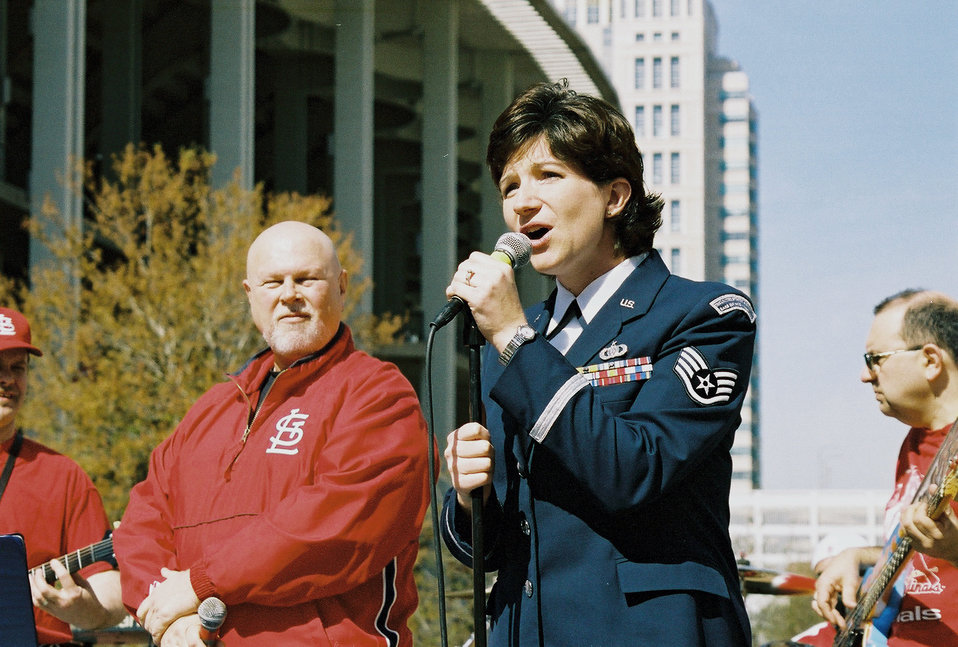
Opening season

ST. LOUIS -- Staff Sgt. Kelly Grant-Ramstack, a U.S. Air Force Band of Mid-America vocalist, performs at a preopening day pep rally for the St. Louis Cardinals on April 5 outside of Busch Stadium here.